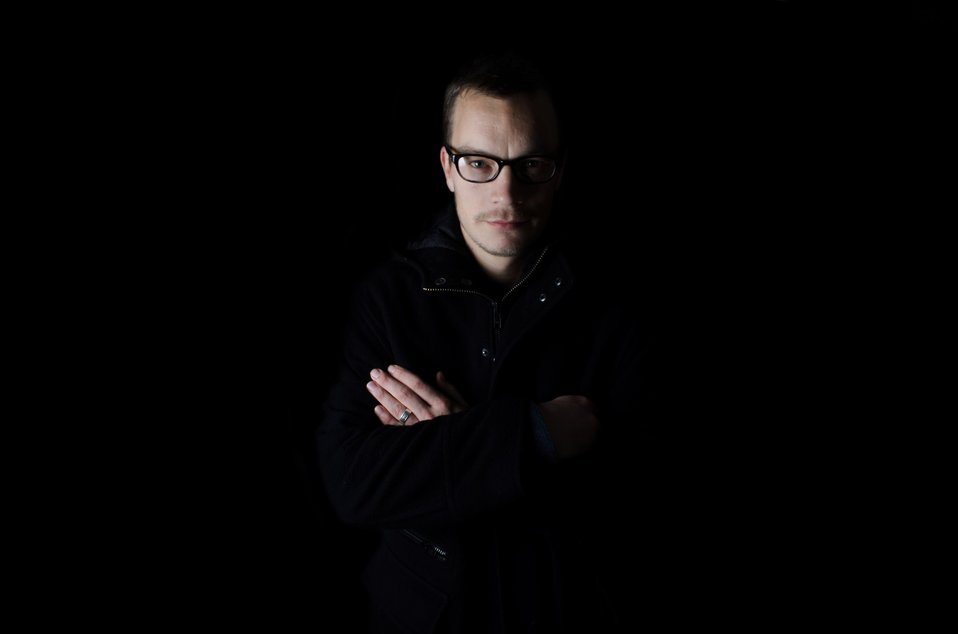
Man and glasses on the black background.